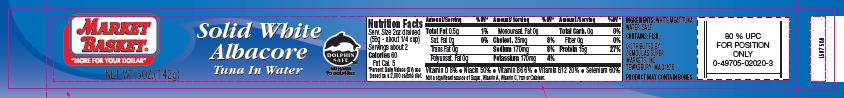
RECALLED - White Albacore Tuna

December 22, 2011 - Product Recall - Market Basket Initiates Limited Regional Voluntary Recall of Market Basket Solid White Albacore Tuna in Water 5 oz. Product Due to Undeclared Allergen.